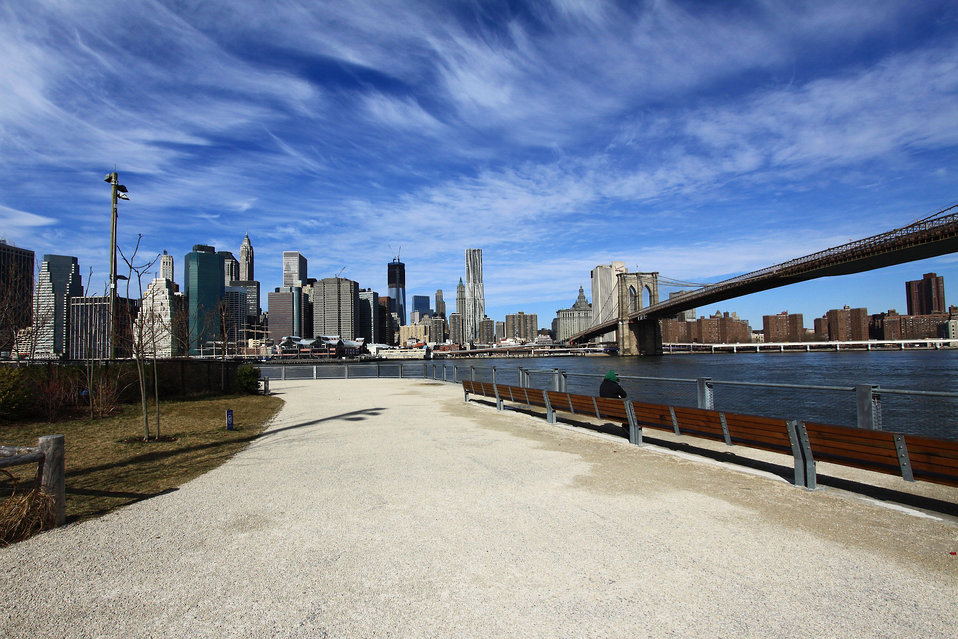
On brooklyn side

Part of lower manhattan and br bridge seen from brooklyn side.